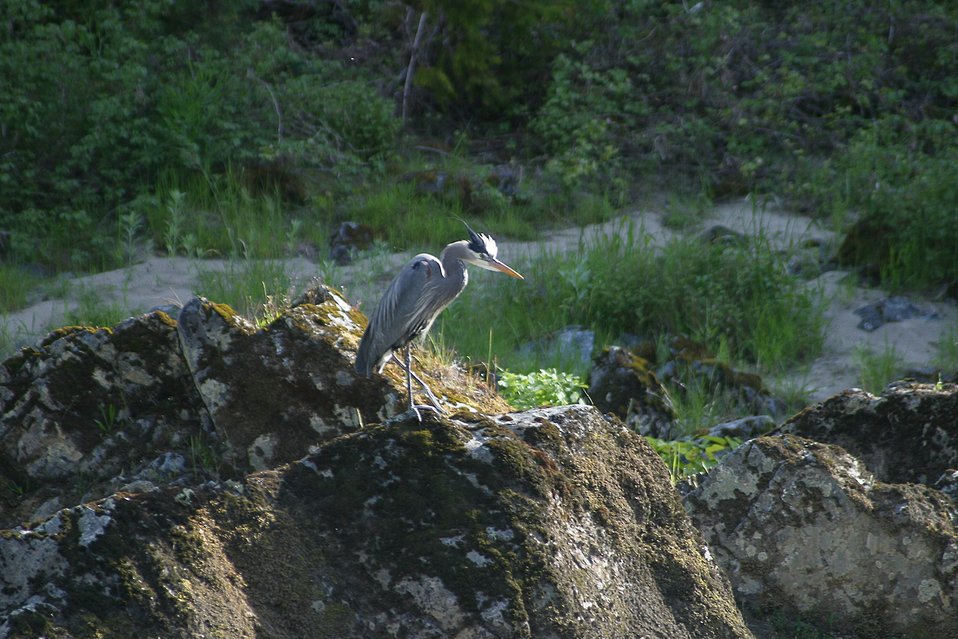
Great Blue Heron on the Wild section of the Rogue River from Grave Creek to Foster Bar. 3100 cfs at Grants Pass and 5300 at Agness.